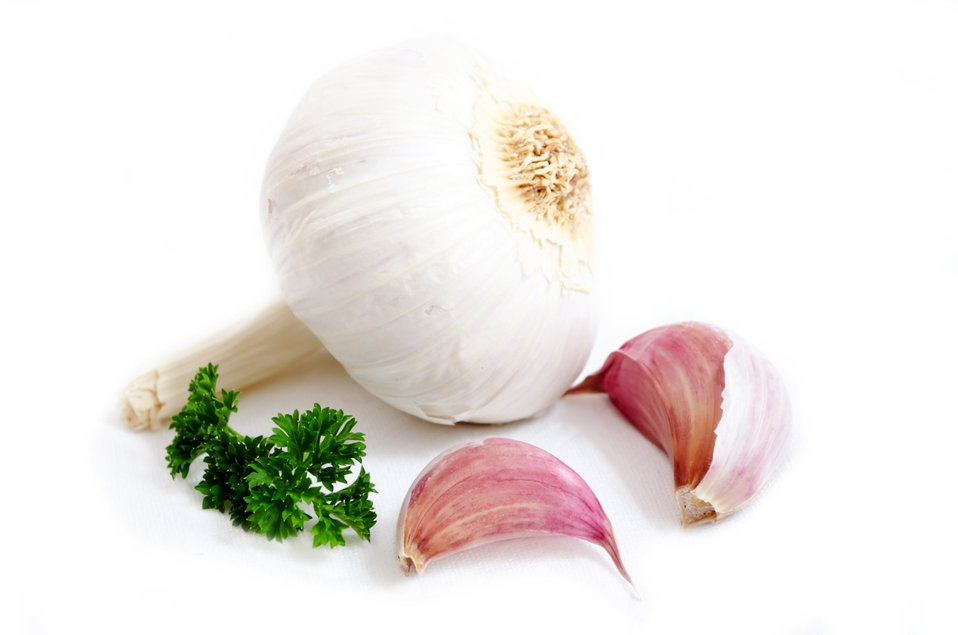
Ripe garlic fruits with green parsley leaves isolated on white.